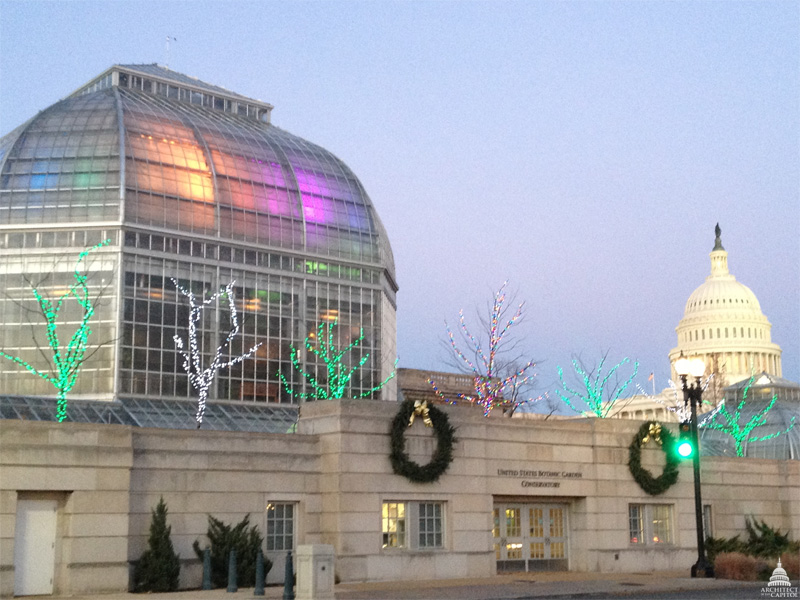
U.S. Botanic Garden Conservatory

Evening at the U.S. Botanic Garden this holiday season.